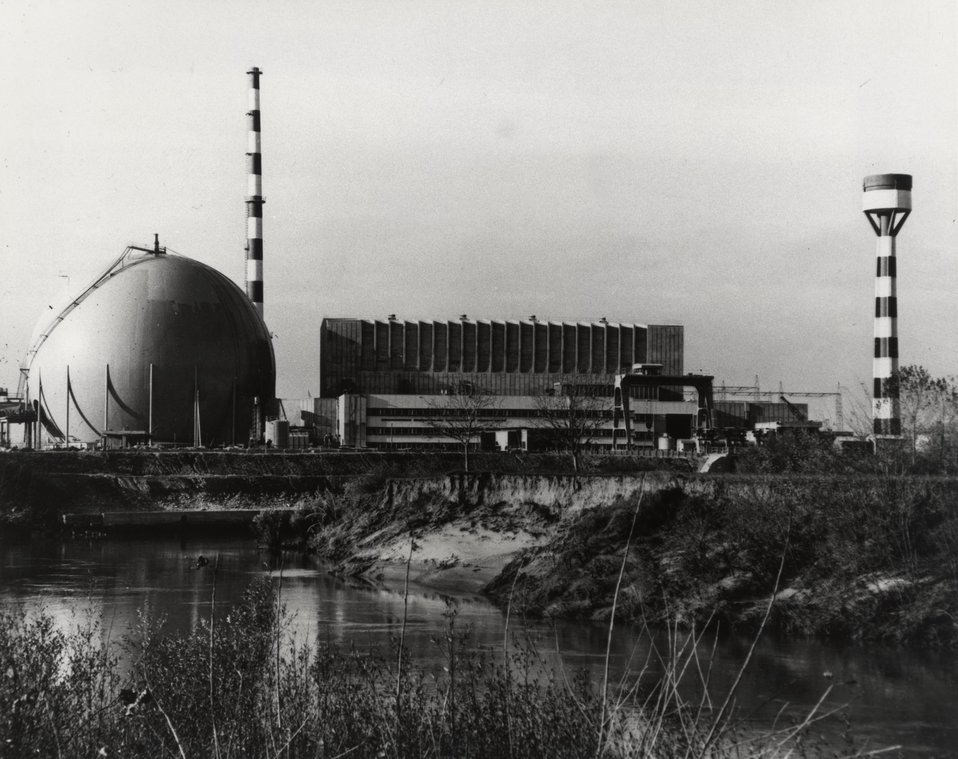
The Italian nuclear power plant SENN (Societa Elettronucleare Nazionale) on the Garigliano near Naples. c. 1967